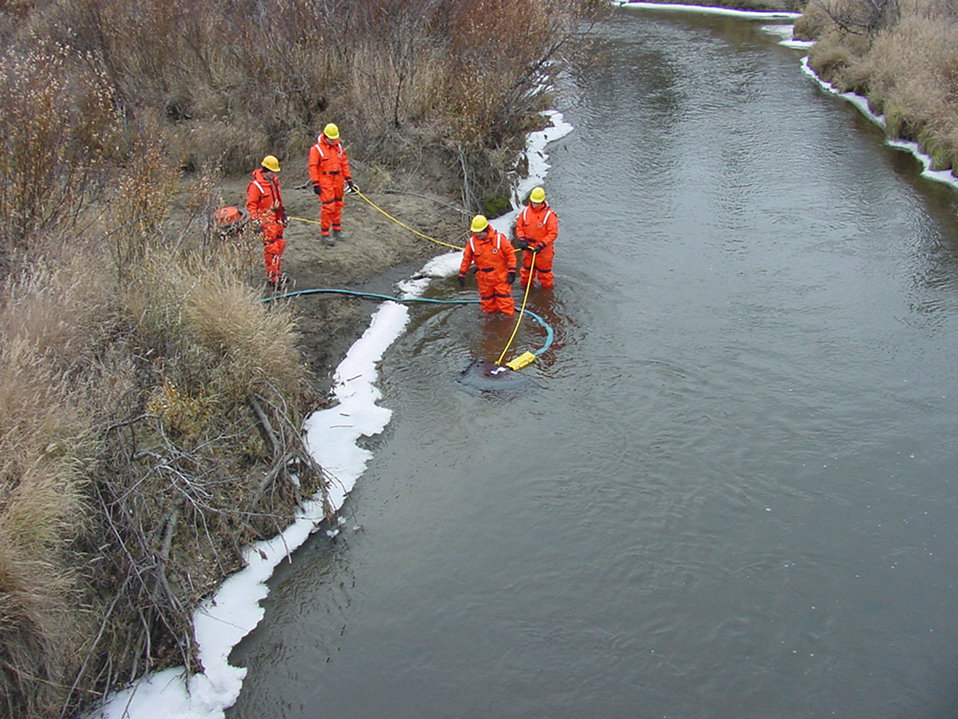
Airmen deploy for fuel-spill exercise

TATALINA, Alaska -- People from the 611th Civil Engineer Squadron spill team here deploy a manta ray skimmer during a fuel spill exercise on the Takotna River. The simulated spill was part of an annual three-day event.